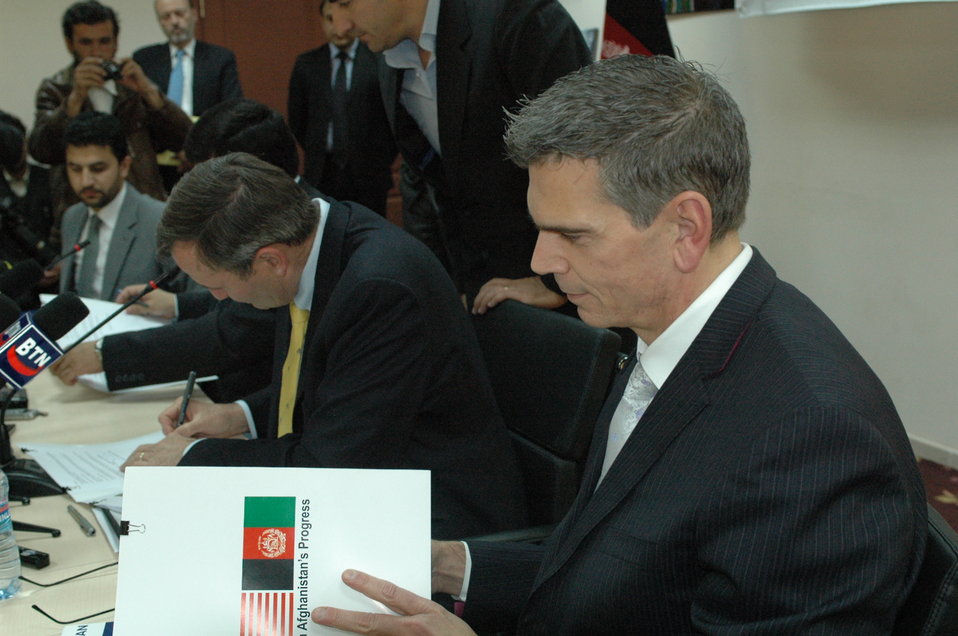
Community Based Stabilization Grants Ceremony, December 7, 2010